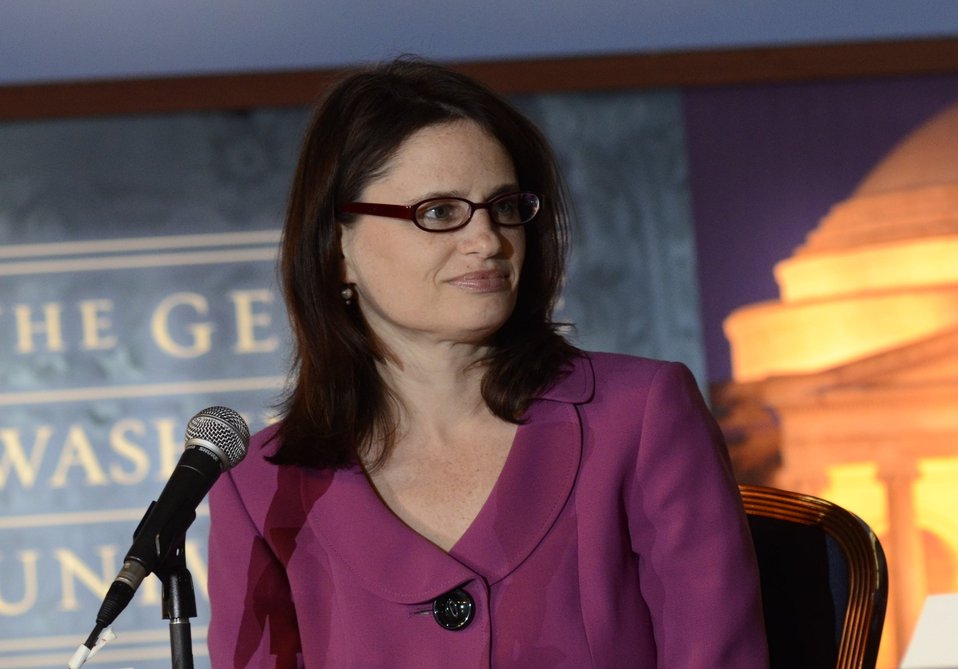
Susan Prolman was a member of the panel for 'Shaping the Farm Bill for a Sustainable Future.' Forum at The Trachtenberg School of Public Policy and Public Administration, George Washington University in Washington, D.C., on Thursday, March 1, 2012.